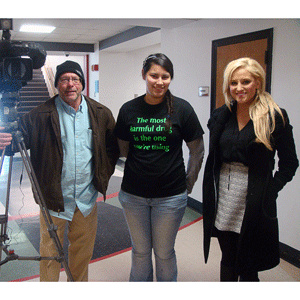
NDFW 2014: Kansas Coverage

Go KFP! Kansas Family Partnership sent a Lawrence High School press release and pitch email about National Drug Facts Week Events to its Lawrence media contacts on Lawrence High School’s activities, the national campaign and KFP’s social media campaign, which resulted in coverage from 6 News Lawrence, KS.